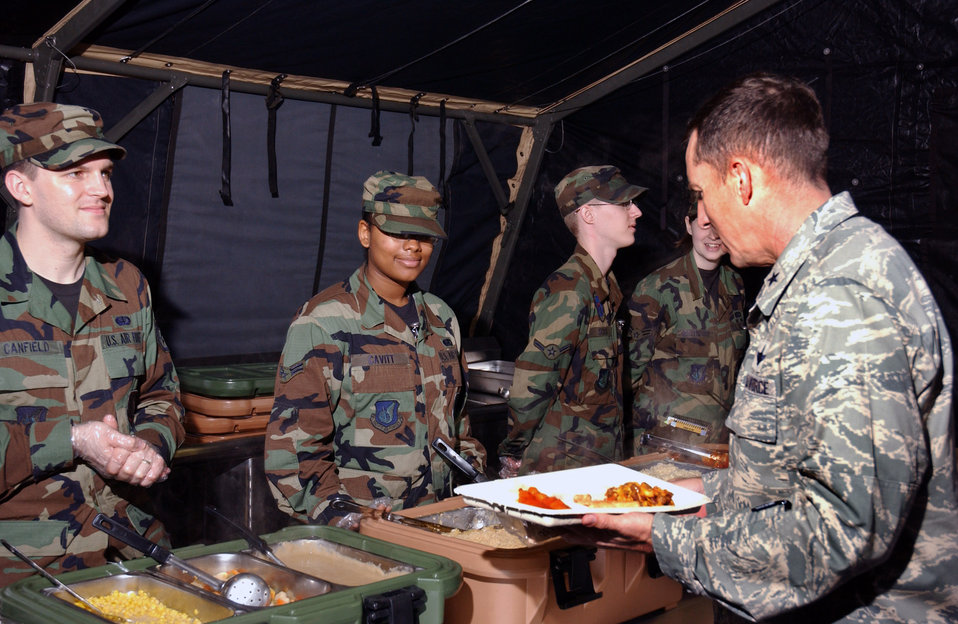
From pallet to palette

Brig. Gen. Brett Williams chooses from a variety of food offered by the 18th Services Squadron's single pallet expeditionary kitchen during the Pacific Air Forces Operational Readiness Inspection March 11at Kadena Air Base, Japan. The deployable kitchen can be set up from pallet to serving in under four hours. PACAF is conducting the inspection from March 9 to 15 to validate the mission readiness of the 18th Wing. General Williams is the 18th Wing commander.